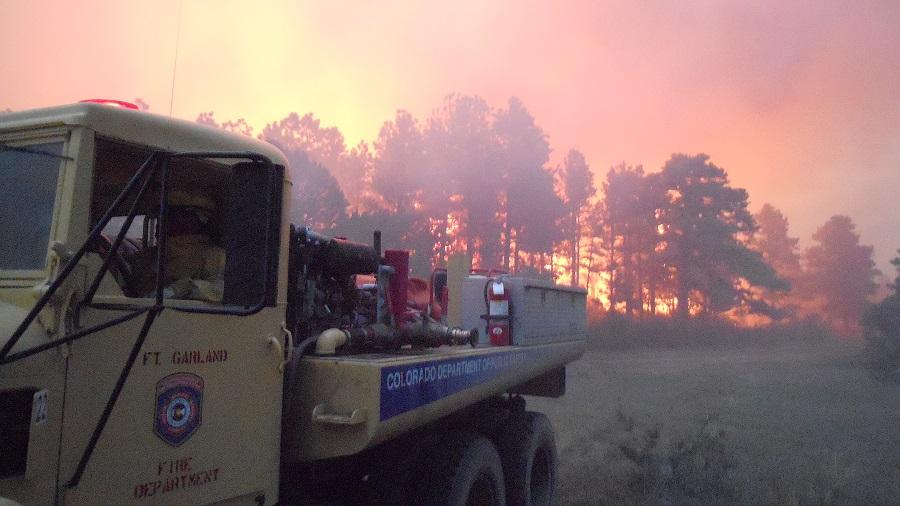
A fire vehicle arrives at scene to fight fire. The East Peak Fire is located approximately 10 miles southwest of Walsenburg, CO and began on Jun. 19, 2013 by lightning. The fire has consumed approximately 13, 572 acres and is approximately 95% contained.